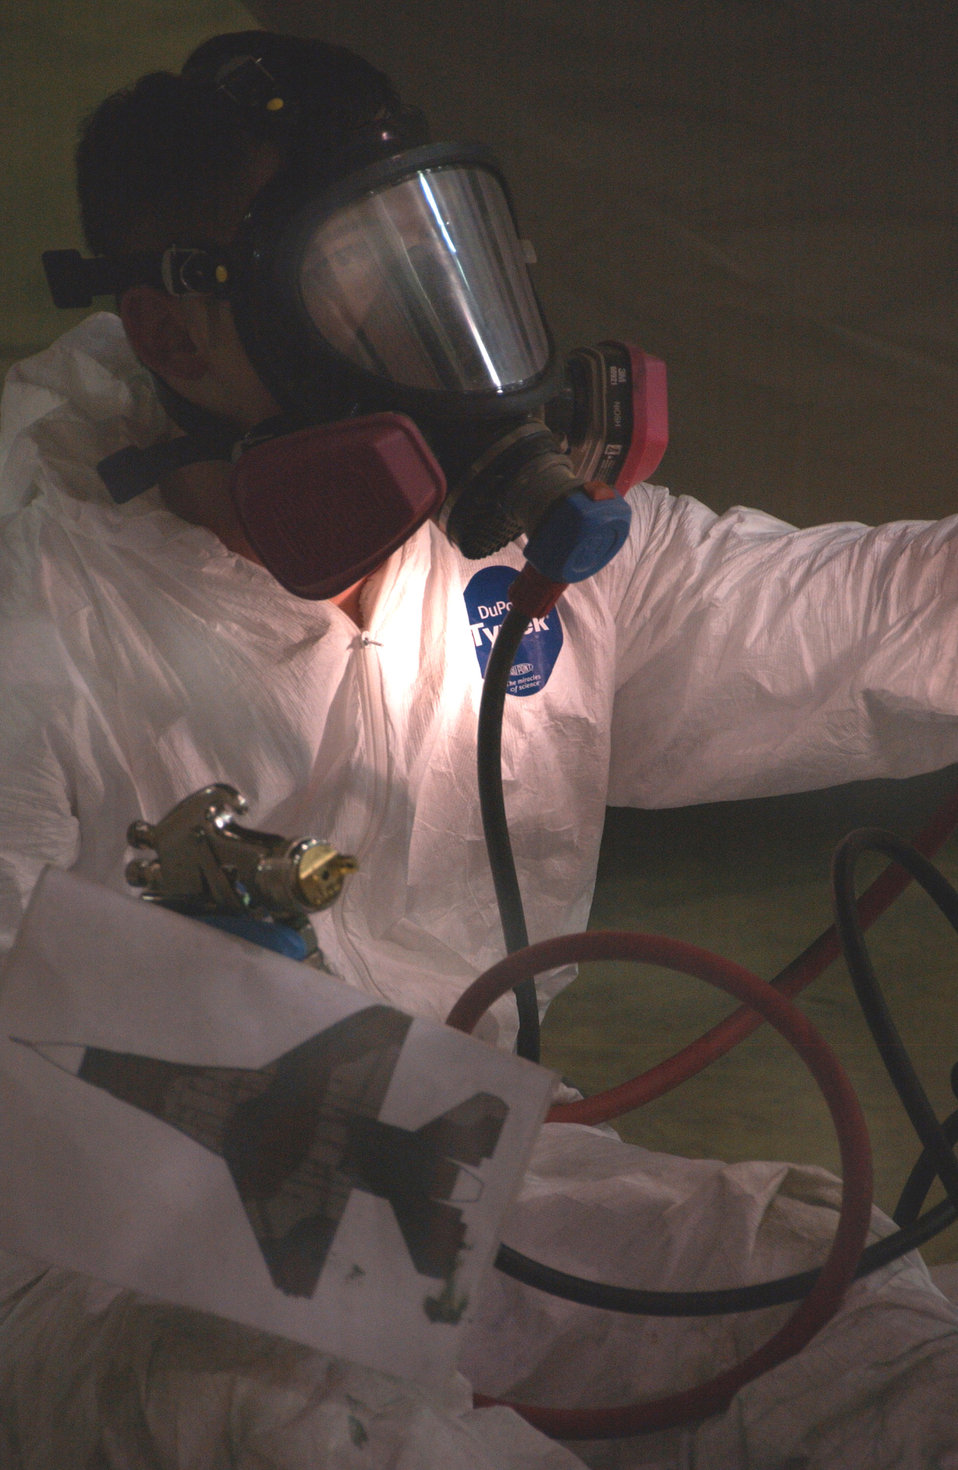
Fresh Coat For New Beginning

Airman 1st Class Eric Rickards sits under an F-16 Fighting Falcon while awaiting more paint Feb. 14 at the corrosion facility. Each aircraft that arrives at Eielson Air Force Base, Alaska, will have a camouflage color scheme applied to stand out from its counterparts while participating in Red Flag-Alaska. Airman Rickards is a 354th Maintenance Squadron sheet metal worker.